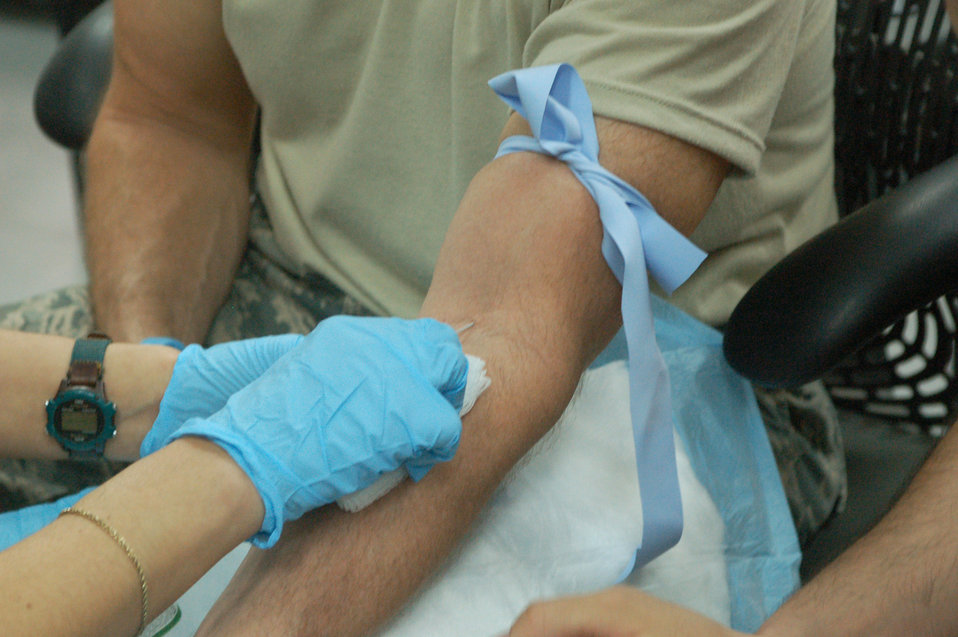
Sather medics prepare for worst, provide their best

Learning to insert an IV is one of the skills taught to non-clinical members of the 447th Expeditionary Medical Squadron March 21 at Sather Air Base, Iraq. In a combat environment, procedures can be done by anyone with training, leaving the doctors to tend to the seriously injured.